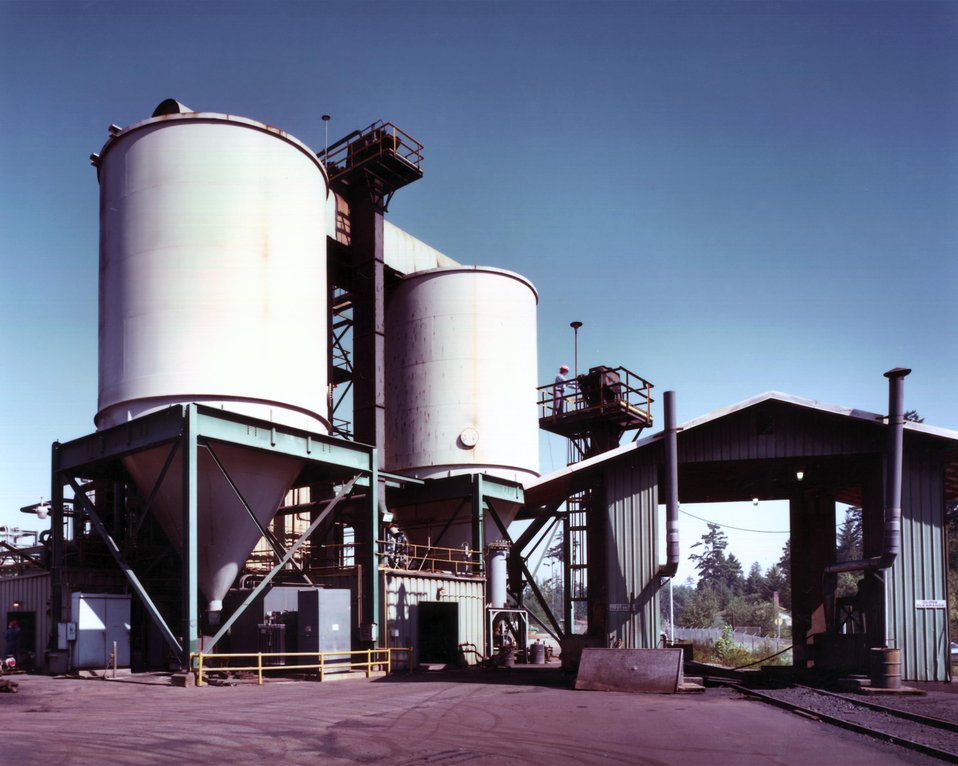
VIEW OF COAL PREPARATION AND SLURRY MIXING.